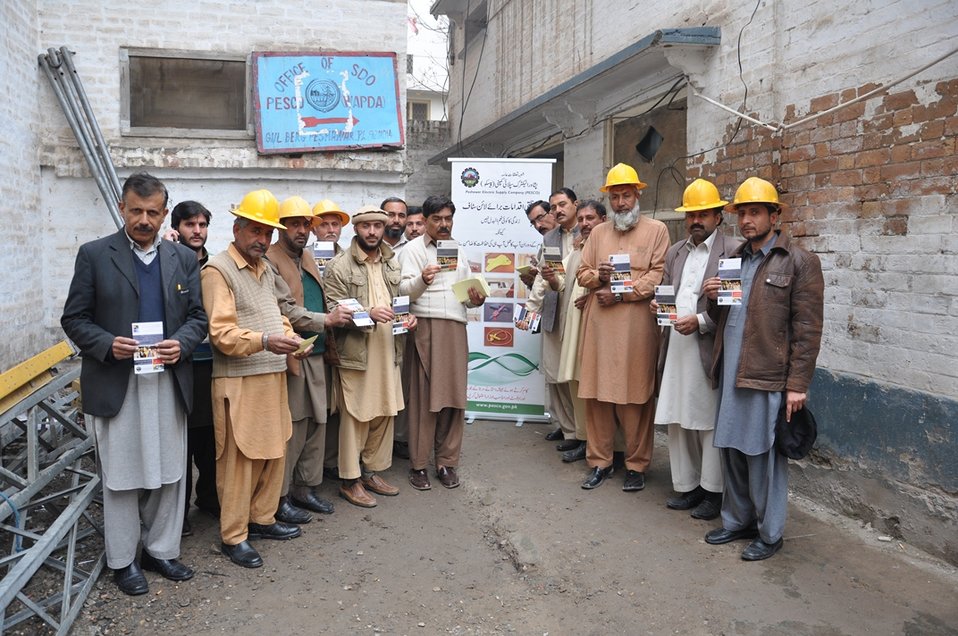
USAID helps power distribution companies to reach out consumers

The USAID Power Distribution Program is facilitating PESCO’s PR department in reaching out to consumers, through the provision of consumer outreach material. This material better assists PESCO in informing consumers about energy conservation, electricity theft and energy efficiency. PESCO is utilizing this material in its own conservation campaigns which will effectively contribute in PR capacity building and in promoting a softer image of the company.